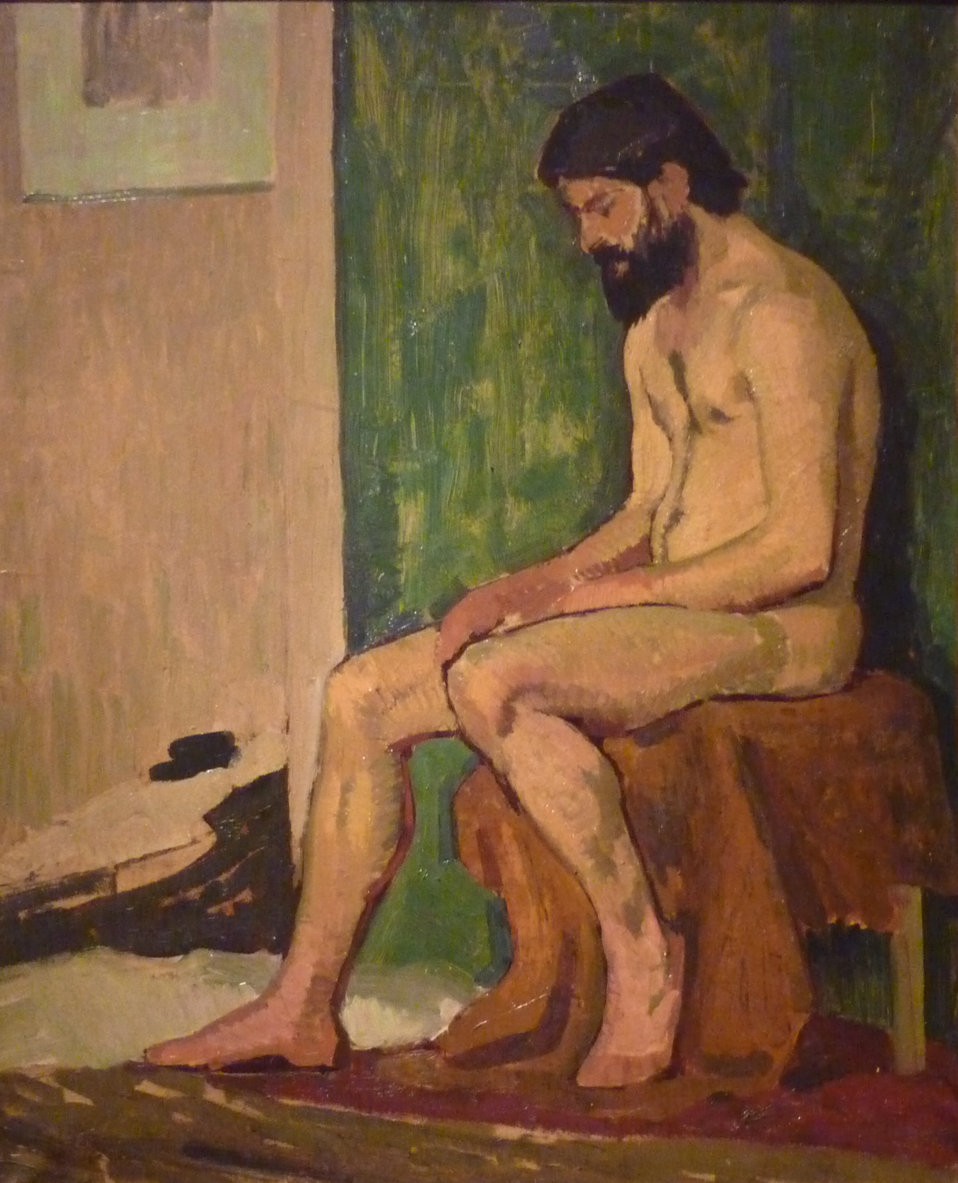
Français : Homme barbu assis Huile sur toile Tableau exposé au musée d'art moderne de Troyes N° d'inventaire : MNLP 189 Informations détaillées : http://www.culture.gouv.fr/public/mistral/joconde fr?ACTION=RETROUVER&FIELD 98=AUTR&VALUE 98=LA FRESNAYE Roger de&NUMBER=3&GRP=0&REQ=((LA FRESNAYE Roger de) :AUTR )&USRNAME=nobody&USRPWD=4$%34P&SPEC=1&SYN=1&IMLY=&MAX1=1&MAX2=1&MAX3=100&DOM=All